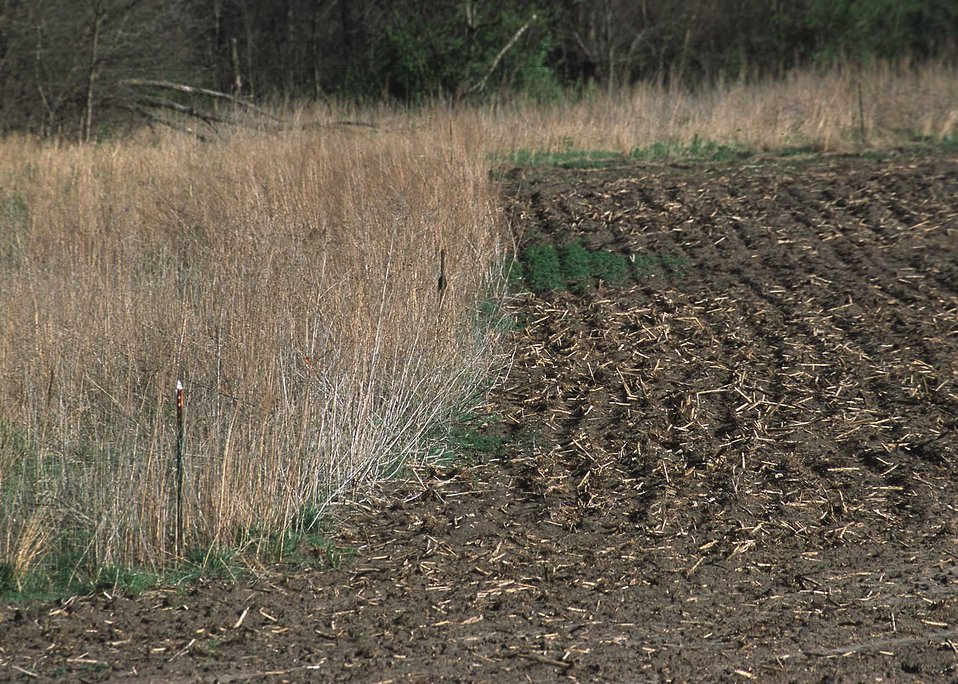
Conservation buffers seeded to Prairie grasses border riparian habitat and a cultivated field. Kansas.